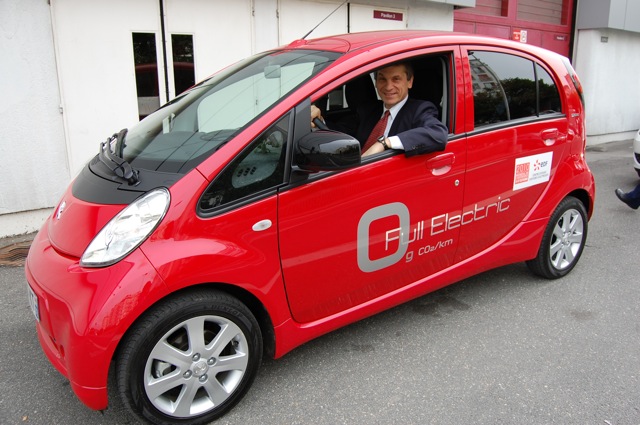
David Sandalow at the Paris Auto Show